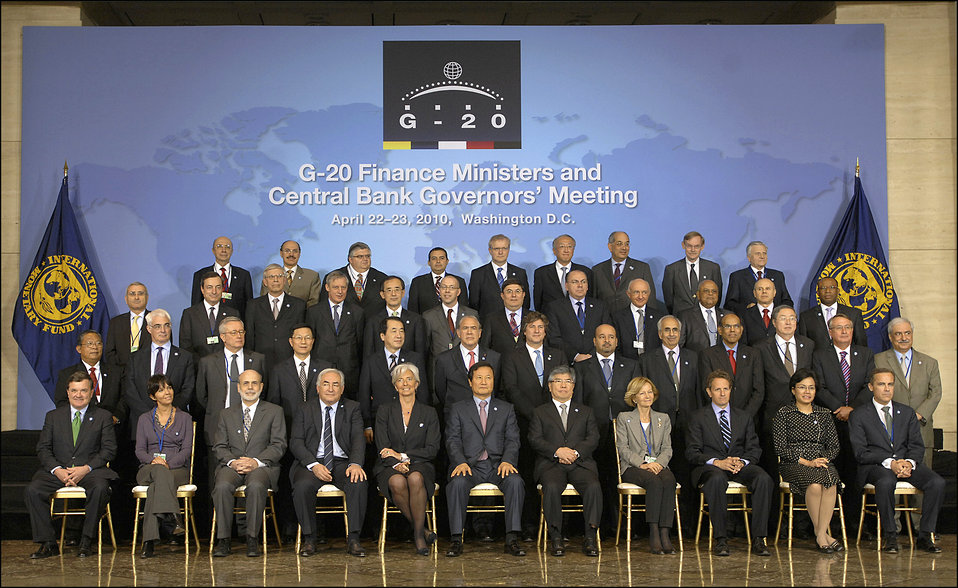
G-20 Finance Ministers and Central Bank Governors' Meeting, 4/23/10

Family Photo at IMF headquarters on April 23, 2010.